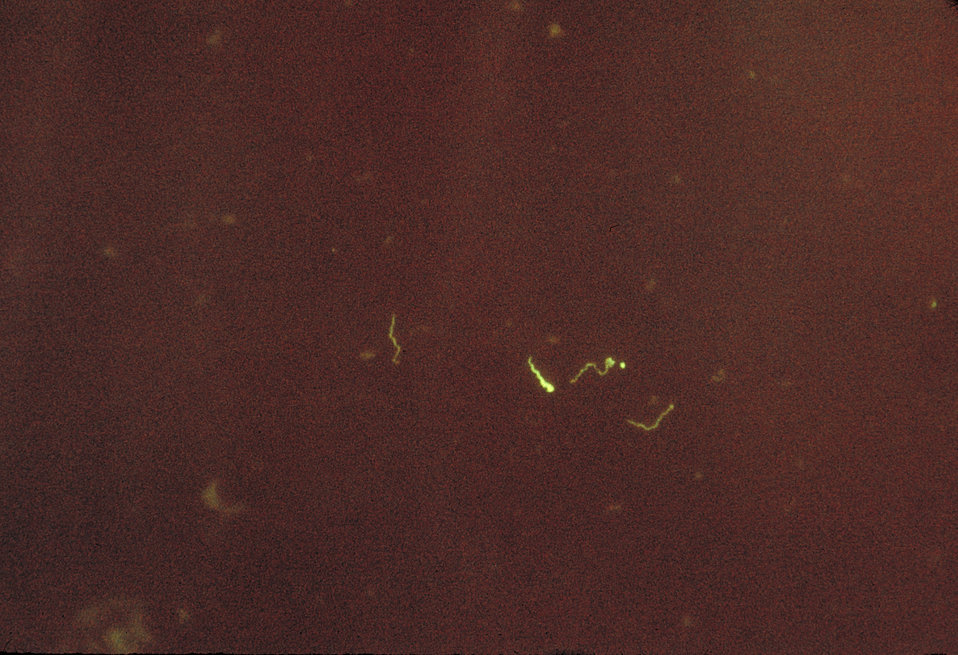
A photomicrograph of Treponema pallidum bacteria using DFA stain for FTA antigen.